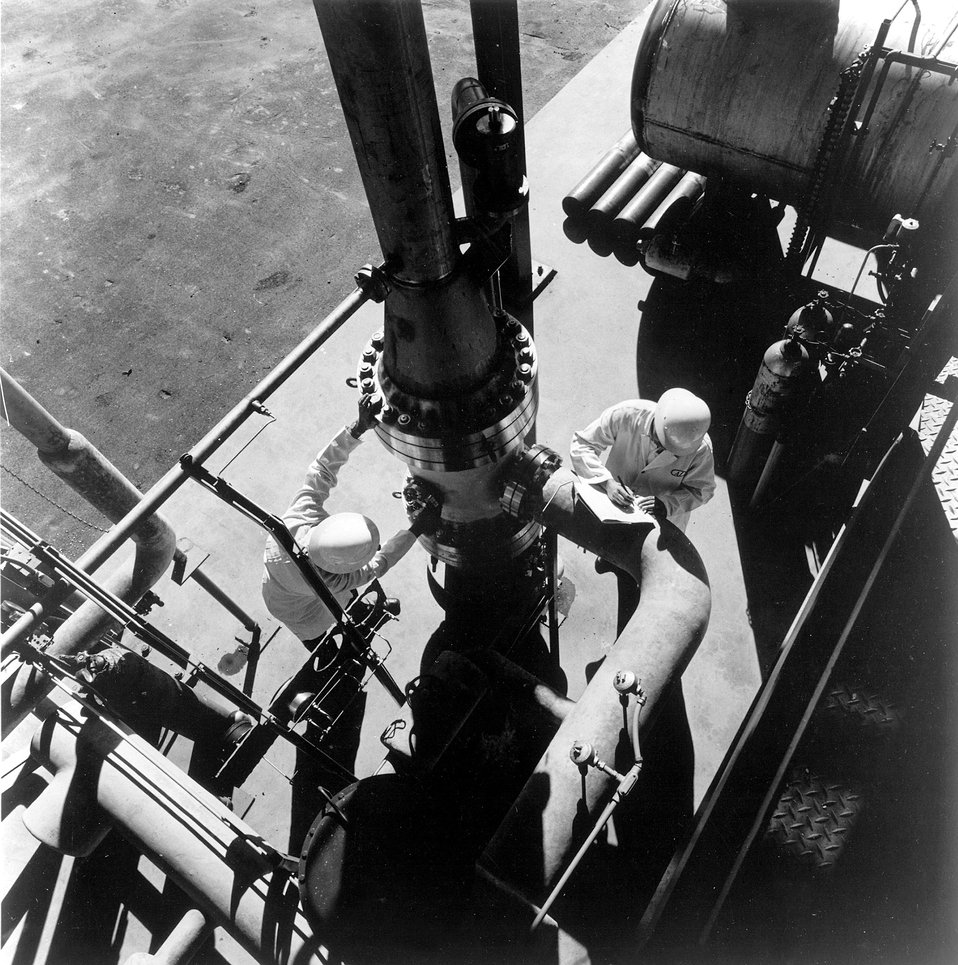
One of the principal facilities is this Large Component Test Loop for thermal shock testing of sodium components, small valves, equipment and instruments for the liquid metal fast breeder reactor program. Atomic International, a division of North American Rockwell, operates the Center at its Santa Susana Nuclear Field Laboratory. Circa 1970.